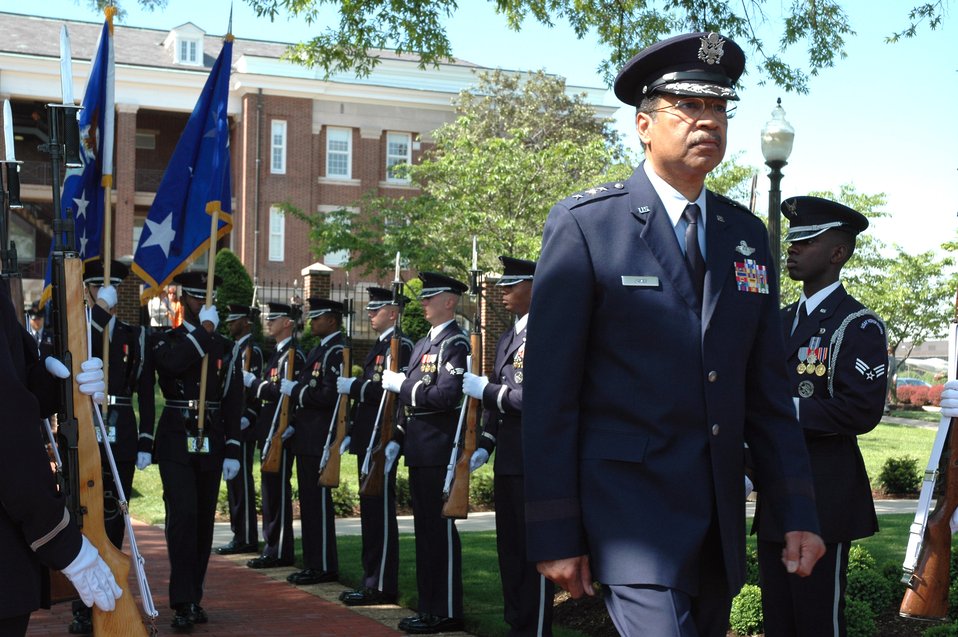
Lt. Gen. James says farewell to Air Guard members

Lt. Gen. Daniel James III, director of the Air National Guard, arrives for his retirement ceremony on the ceremonial lawn at Bolling Air Force Base in Washington, D.C., on Wednesday, May 10, 2006.